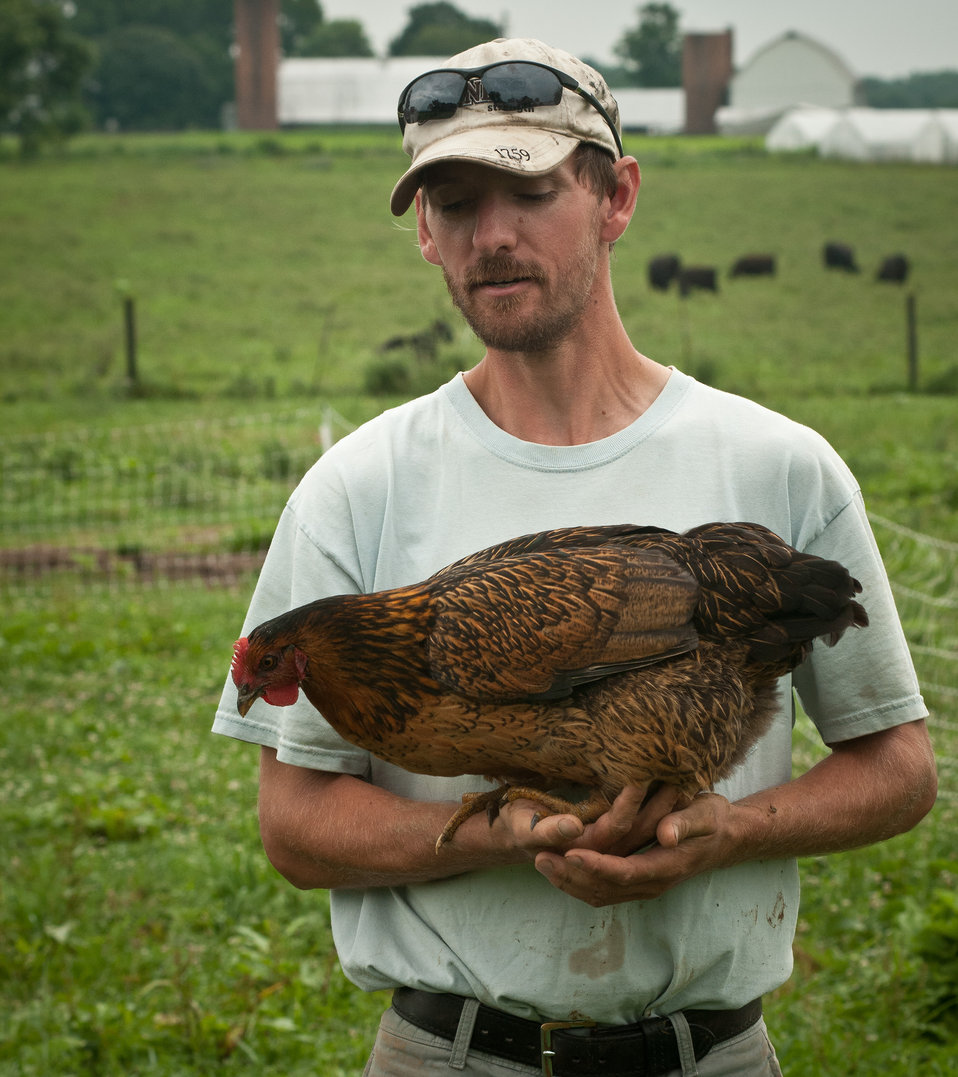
Farm assistant George Kloph checks on the health and safety of laying hens at Nick’s Organic Farm, in Adamstown, MD, on Friday, July 12, 2013. The fence helps keep predators away from the chickens. Discarded horse trailers have been repurposed as coops with nests on the side that allow for easy egg harvesting. The farm, owned by Nick Maravell, produces Black Angus beef, chicken, turkey, eggs, hay, soybeans, corn, alfalfa, orchard grass, rye; and other crops. The cattle are100% grass-fed receiving certified organic pasture, certified organic hay (in winter), water and mineral salts mixed with sea kelp. The cattle are not fed hormones, antibiotics or animal products. Poultry feed from grain is ground from organic grain. The poultry also graze on organic pastures. The farm has conducted on-farm research with federal, state and non-profit agencies to refine organic practices.